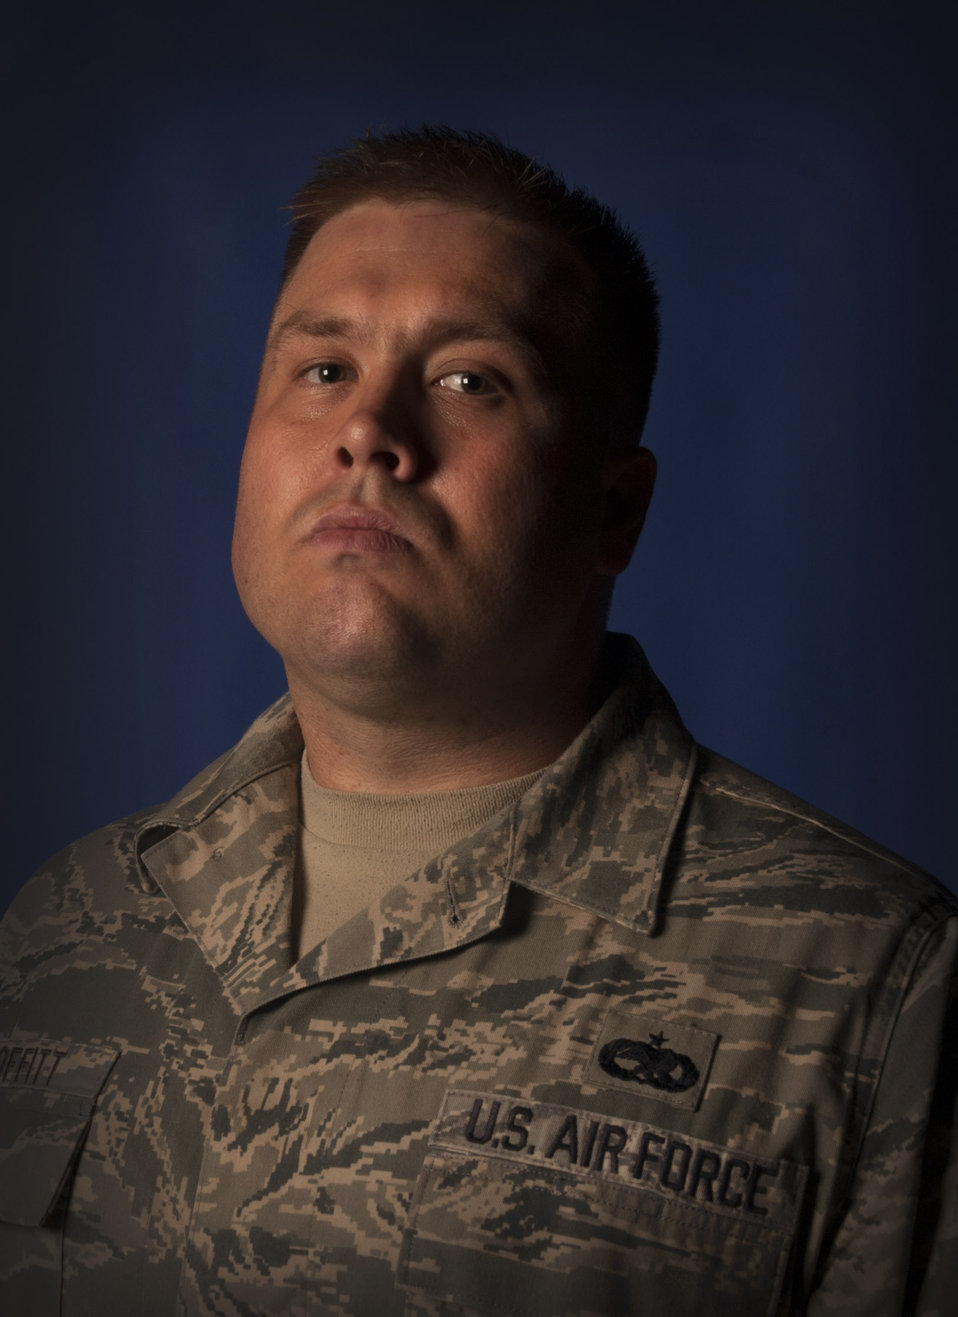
Staff Sgt. Robert Proffitt, 373rd Training Squadron C-17 crew chief instructor, recently pulled a young girl from the ocean water after a riptide pulled her out too far. Proffitt faced another life-saving moment when he saved a co-worker who was choking on a turkey sandwhich.